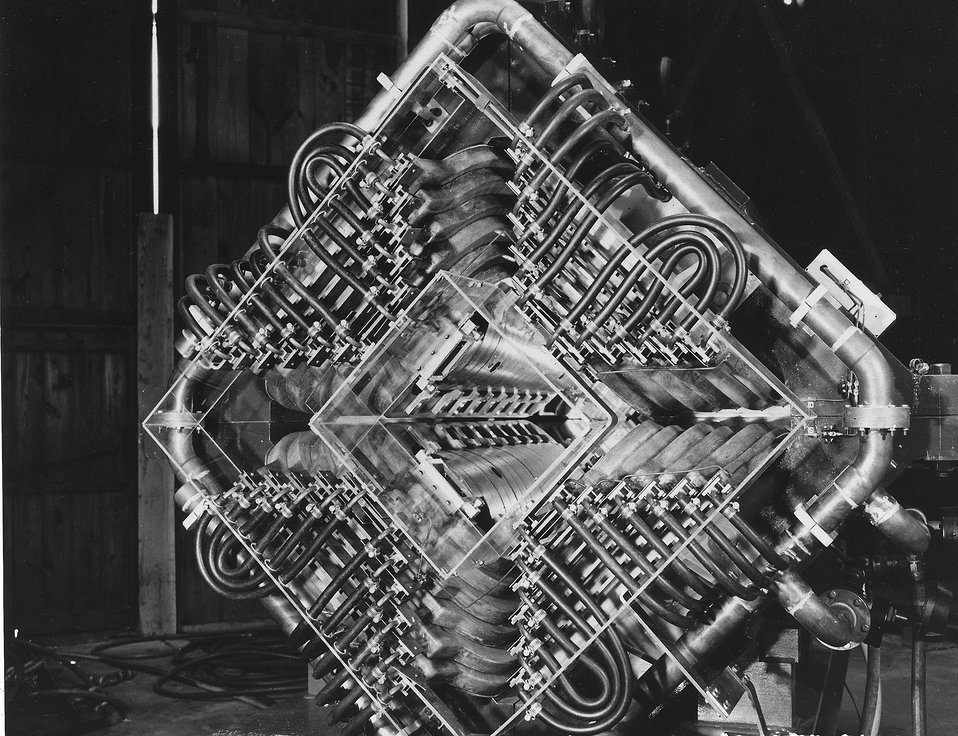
Front view of the strong focusing magnet used to narrow down external beams of charged nuclear particles which emerge from the Cosmotron (not shown) at Brookhaven National Laboratory. c. 1957